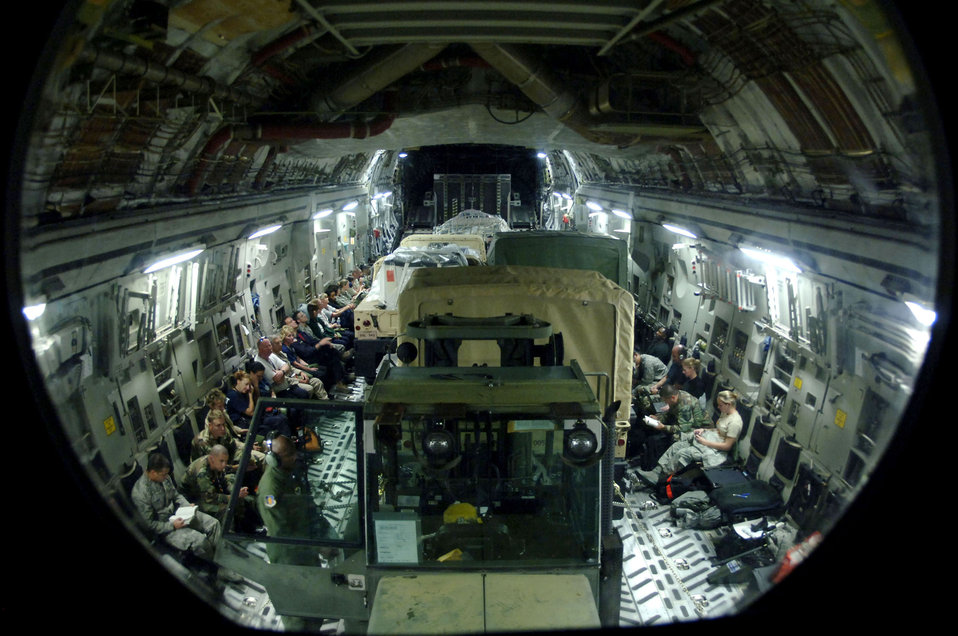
Hurricane Gustav

On a C-17 Globemaster III en route to Altus Air Force Base, Okla., members of the 6th Medical Group Mobile Aeromedical Staging Facility team from MacDill AFB, Fla., plan for post-hurricane operations. The team deployed to Beaumont, Texas, to assist in Hurricane Gustav evacuations.